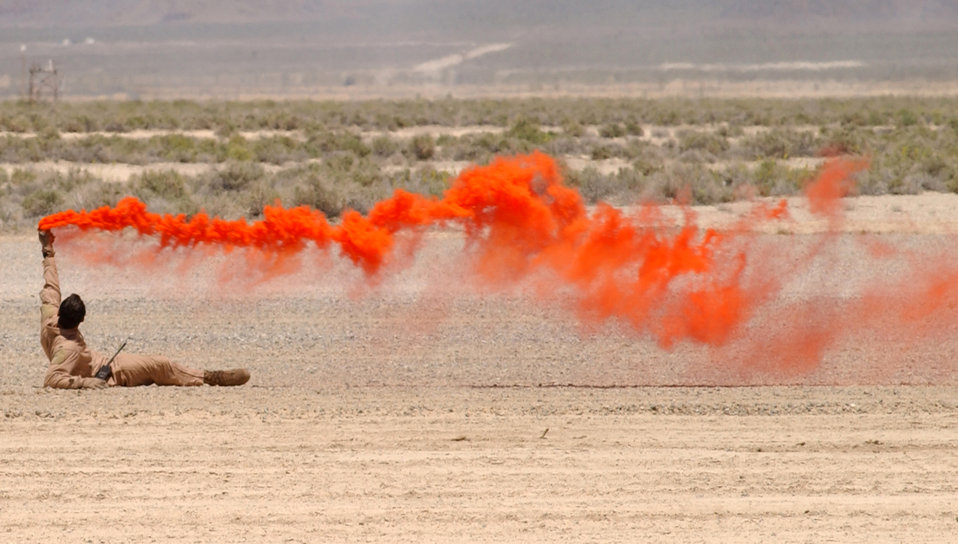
Downed on the range

NELLIS AIR FORCE BASE, Nev. -- A member of the 58th Rescue Squadron signals for help here May 12 while playing the part of a downed pilot during a firepower demonstration on the bombing range here.